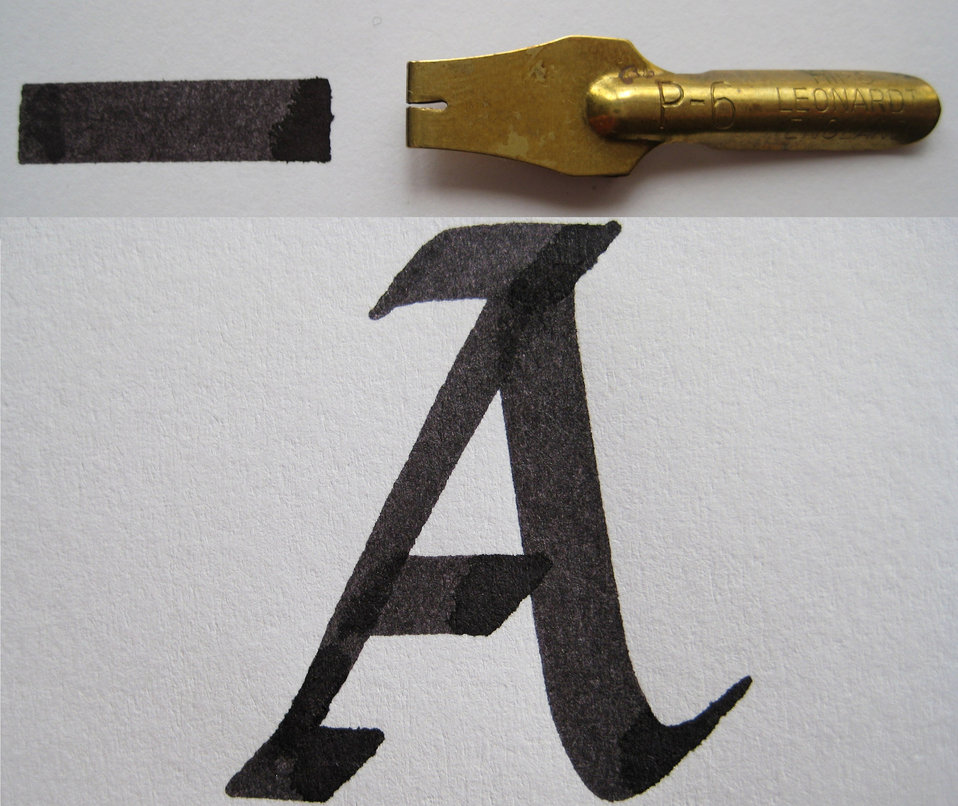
Deutsch: Plakatfeder mit Strich und Schriftbeispiel Poster nib with a stroke and writing sample Fran√ßais†: Plume pour traits √† bandes avec un trait et un caract√®re typique